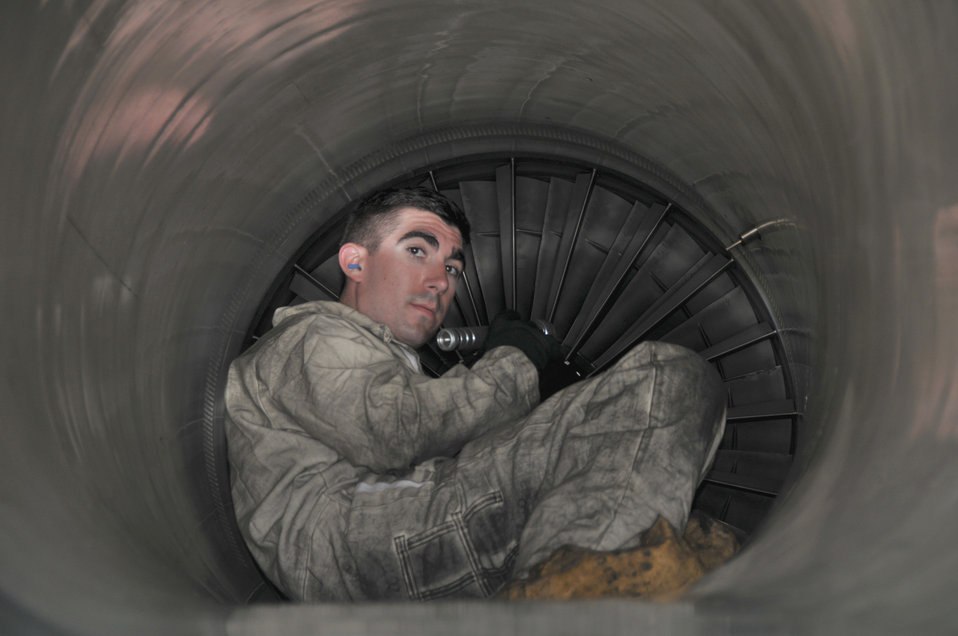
Inside job

Staff Sgt. Andrew Masciola inspects the intake and engine blades of an F-15 Eagle April 12, 2011, at Tyndall Air Force Base, Fla. Sergeant Masciola is from the Massachusetts Air National Guard's 104th Fighter Wing, and is deployed there for training.